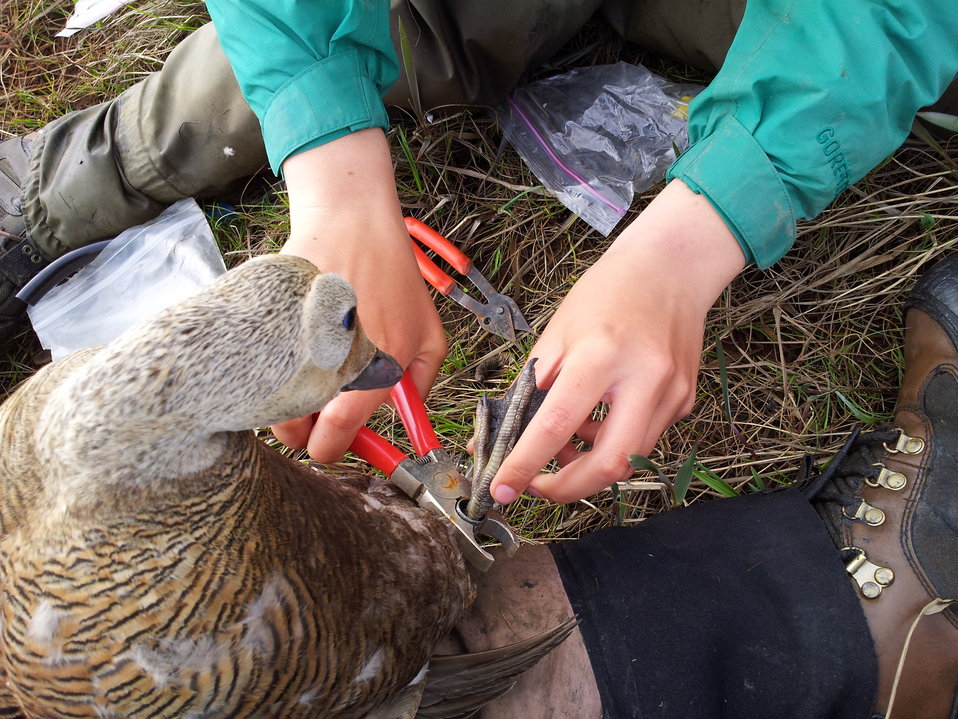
Metal Band Application

Once a female has been captured she is given a metal band with a unique code.

USFWS Yukon Delta NWR